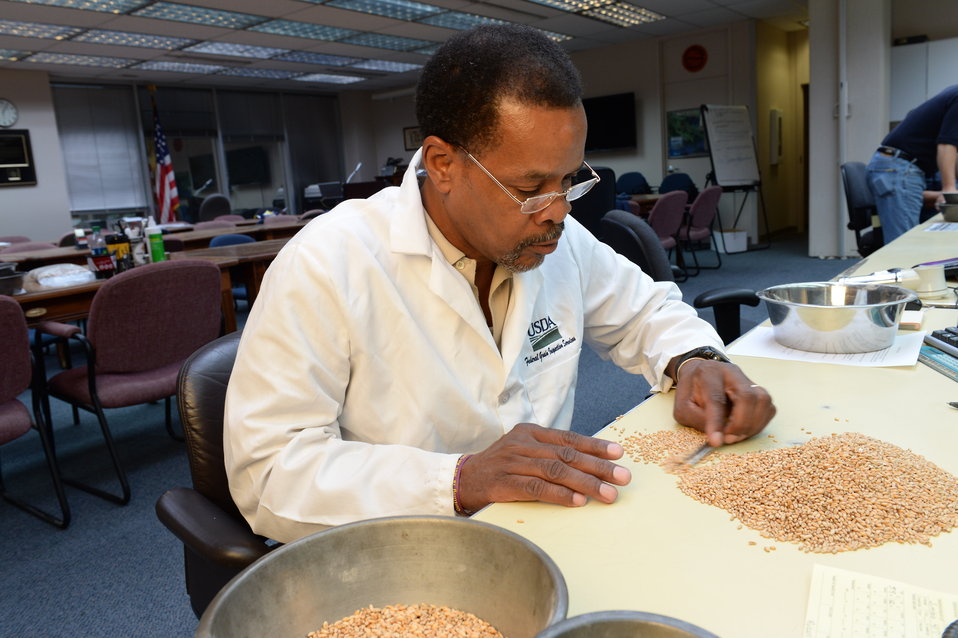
A U.S. Department of Agriculture (USDA) Grain Inspection, Packers and Stockyards Administration (GIPSA) Federal Grain Inspection Service (FGIS) scientist tests wheat at the FGIS inspection laboratory in New Orleans, LA on Monday, Nov. 18, 2013.